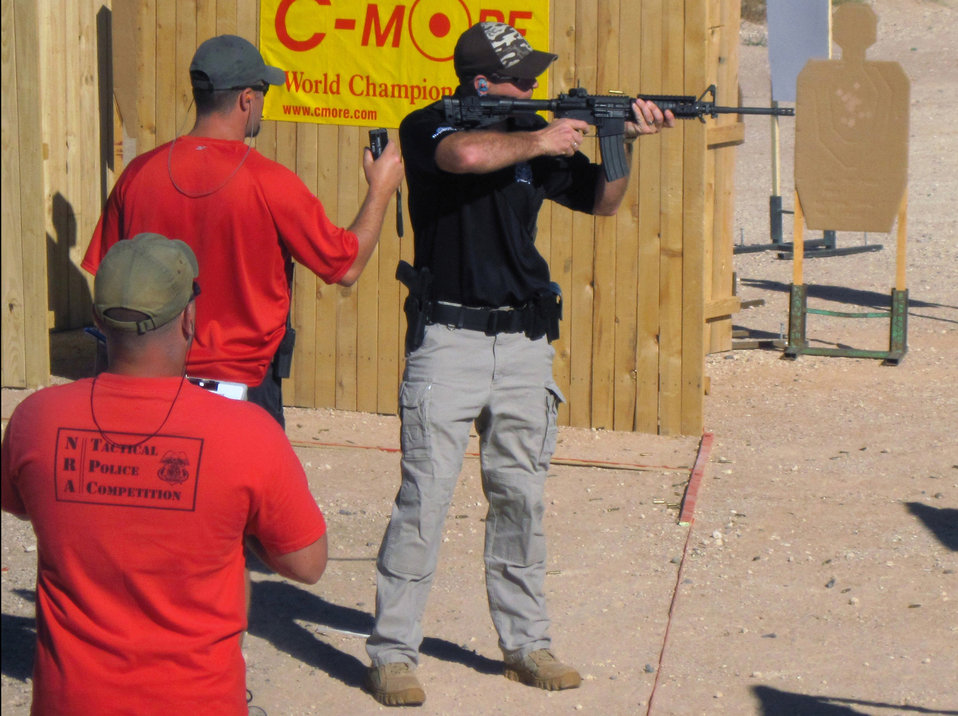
NRA

Staff Sgt. Michael Henderson shoots National Rifle Association National Police Shooting Championship recently in Albuquerque, N.M. He placed first in the event for the third time straight. Sergeant Henderson is a combat arms instructor assigned to the 72nd Security Forces Squadron at Tinker Air Force Base, Okla.